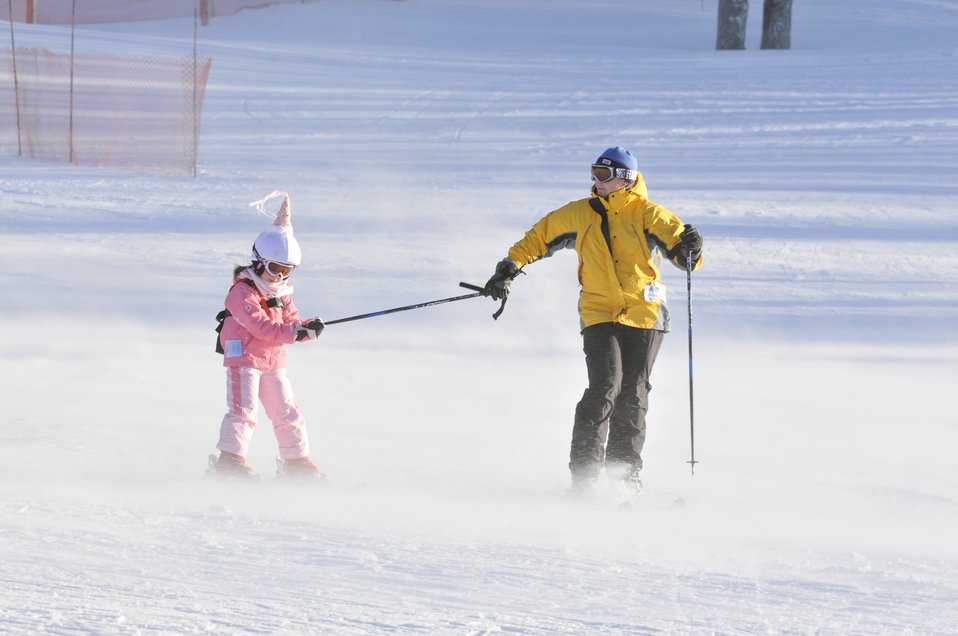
Visitors to the Monongahela National Forest in Davis, West Virginia enjoy skiing on January 28, 2010. National Forests offer visitors access to a diversity of outdoor winter recreational opportunities such as skiing, ski jumping, fishing, and Nordic walking. Visitors can view wildlife, scenic vistas, and explore historic places.